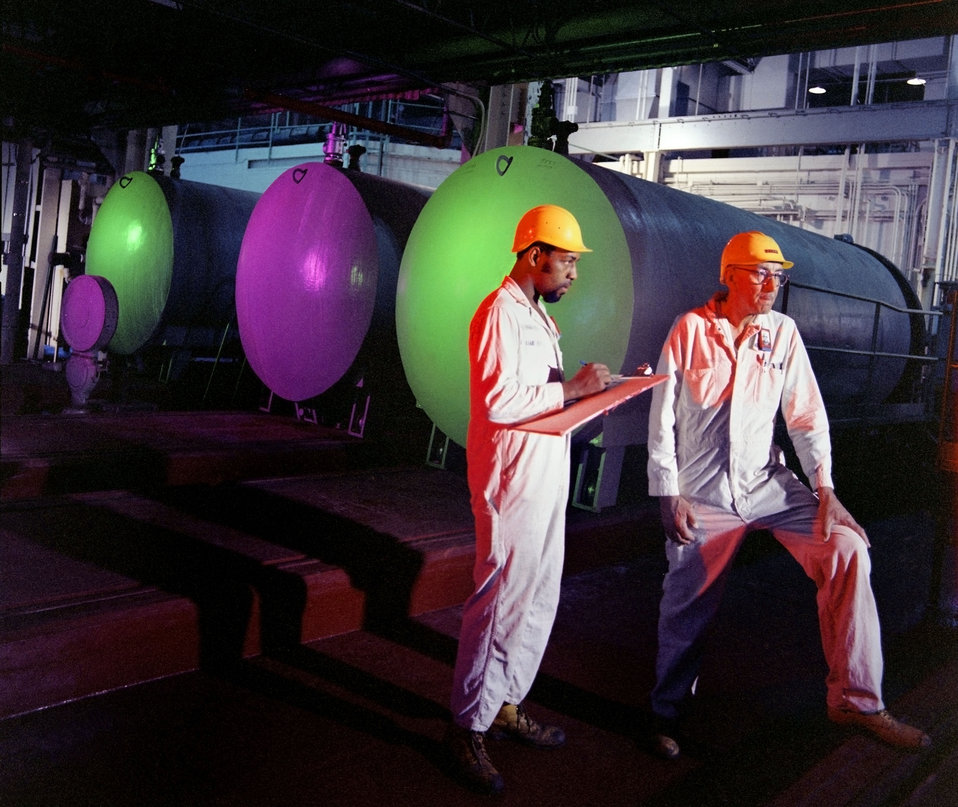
Inside K-33 1970 Oak Ridge

70-406-1 DOE photo Frank Hoffman 12-21-1970 Oak Ridge Tennessee